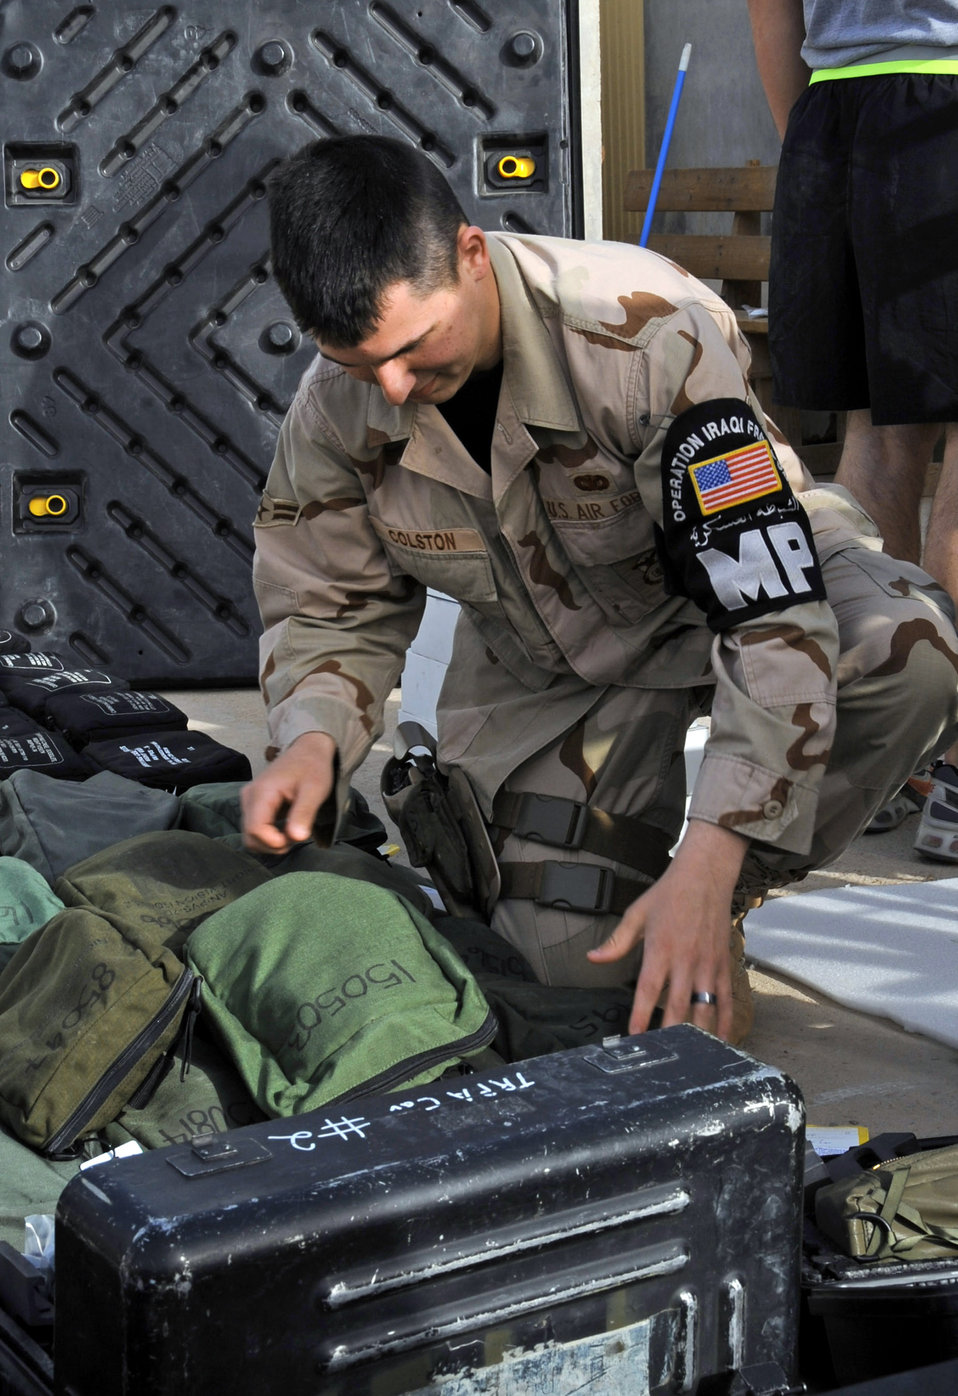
Ali Airmen keep creepy crawlies contained

Airman 1st Class Cody Colston inspects cargo at Ali Base, Iraq, before it leaves for the United States. The Provost Marshal's office inspects the cargo of more than 10,000 incoming and outgoing personnel to help prevent the contamination of foreign life in native ecosystems. Airman Colston is a 407th Provost Marshal's office military police Airman, and is deployed from Royal Air Force Lakenheath, England.